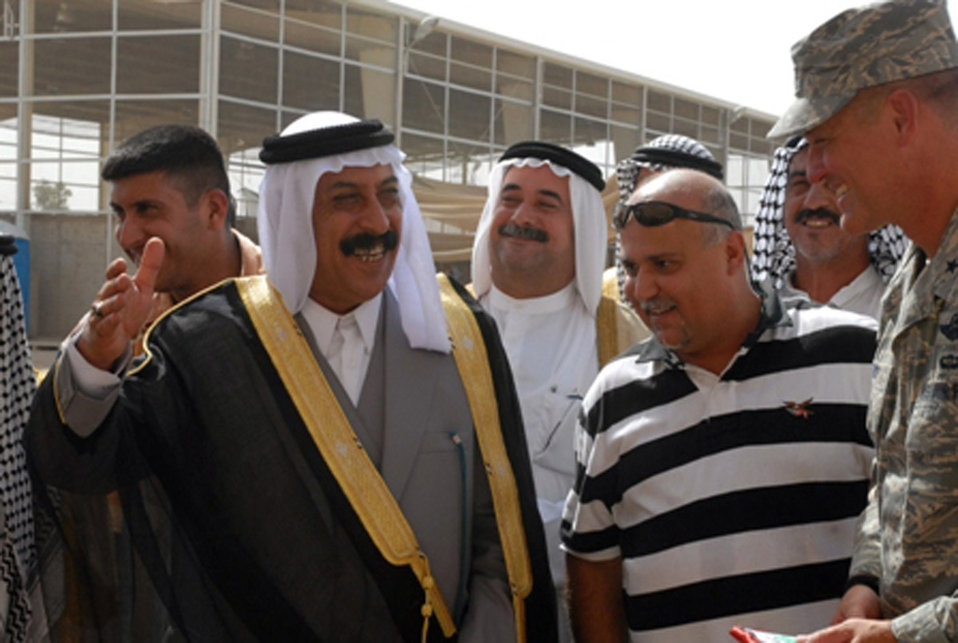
Recycling contract turns trash into treasure

Sheikh Saad Hasan Altememy, a local leader near Balad, Iraq, confers with Air Force Brig. Gen. Brian Bishop July 11during a ribbon-cutting ceremony for an Iraqi-run recycling center at Joint Base Balad, Iraq. The recycling center will provide 30 jobs to local Iraqis and assist current efforts to sort through daily garbage collection on base for recyclables. The recyclables will then be shipped off base and sold for profit on the Iraqi market. General Bishop is the 332nd Air Expeditionary Wing commander and installation commander.